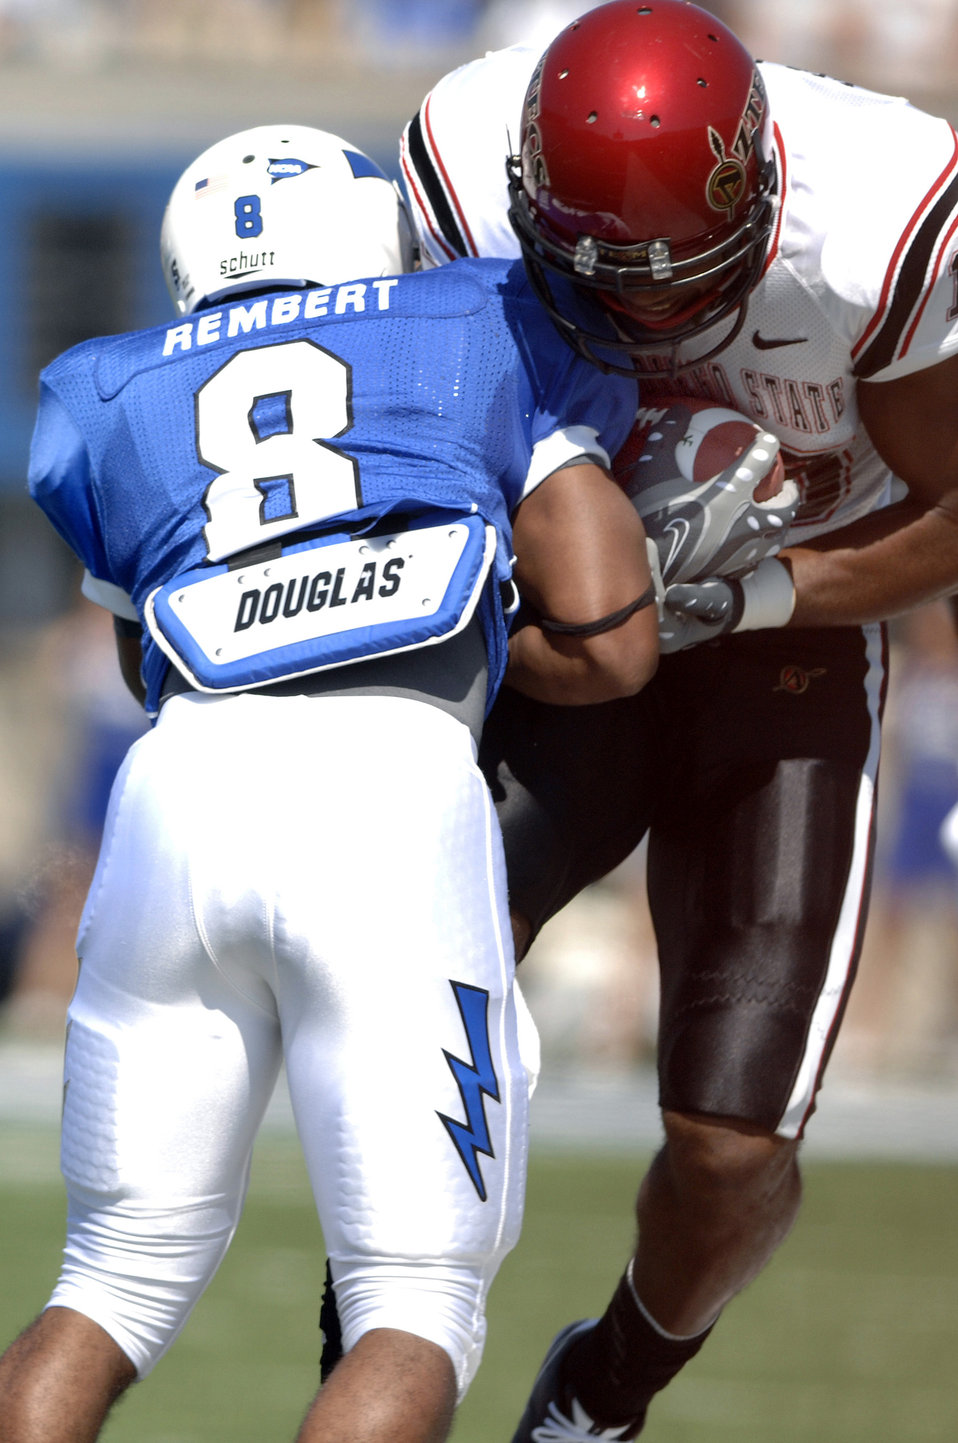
Football: Rembert, 10 other Falcons named to all-conference team

U.S. Air Force Academy junior defensive back Reggie Rembert tackles a San Diego State wide receiver during the Air Force's 26-14 win over San Diego State Sept. 26, 2009, at Falcon Stadium, Colo. Rembert, a native of Flower Mound, Texas, forced a fumble and returned an interception for a touchdown.